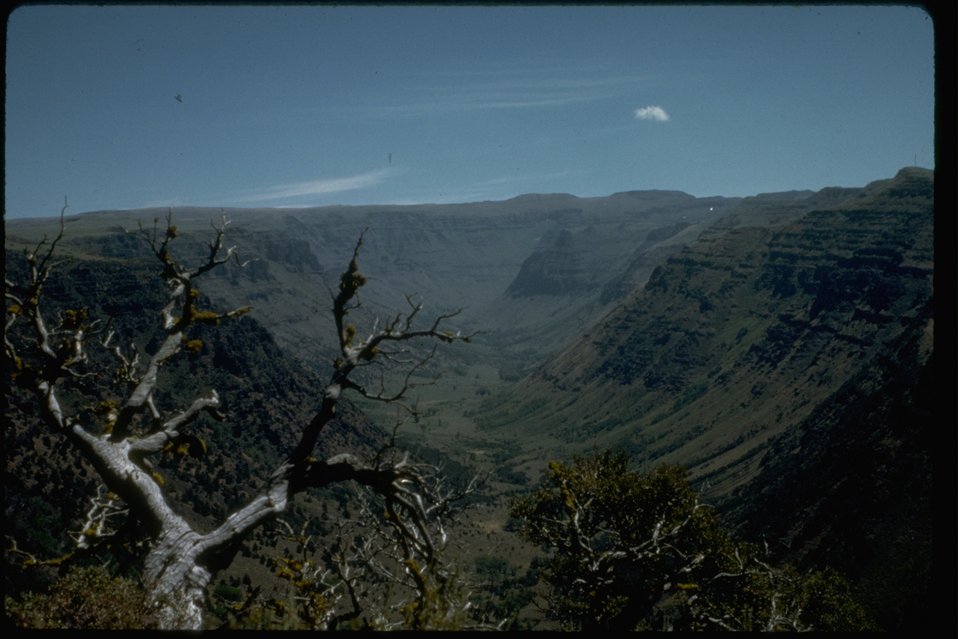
Looking up Big Indian Gorge.